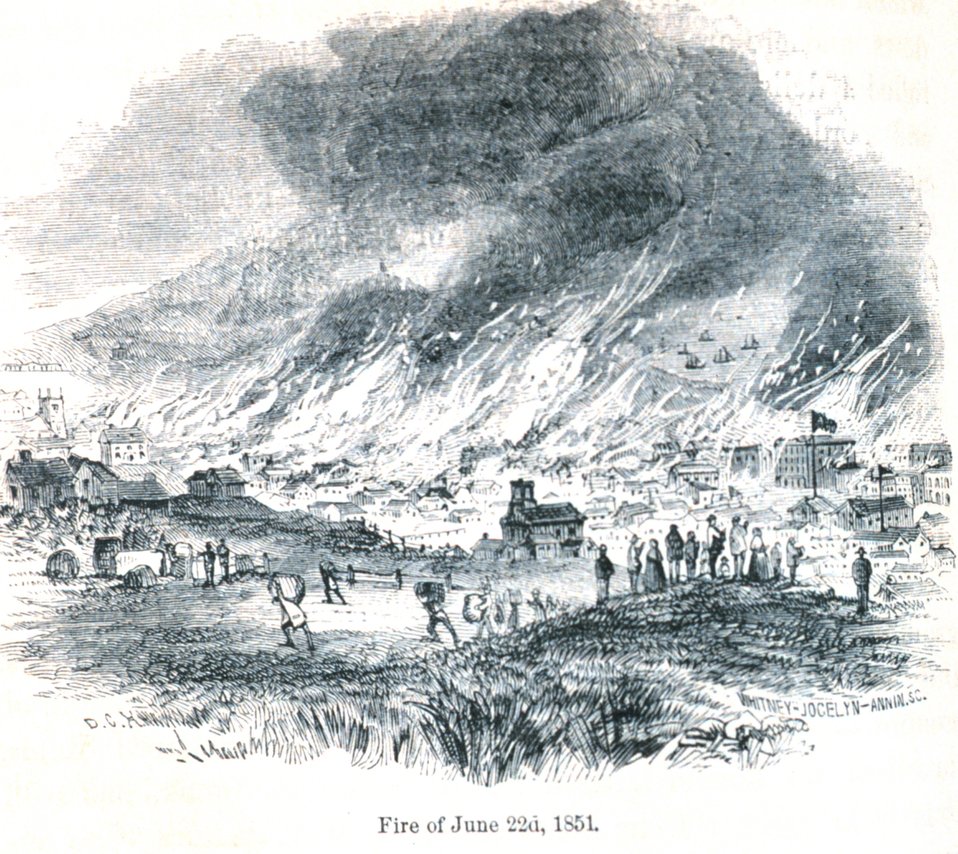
The San Francisco fire of June 22nd, 1851. In: 'The Annals of San Francisco'. Frank Soule, John Gihon, and James Nesbit. 1855. Page 598. D. Appleton & Company, New York. F869.S3.S7 1855.